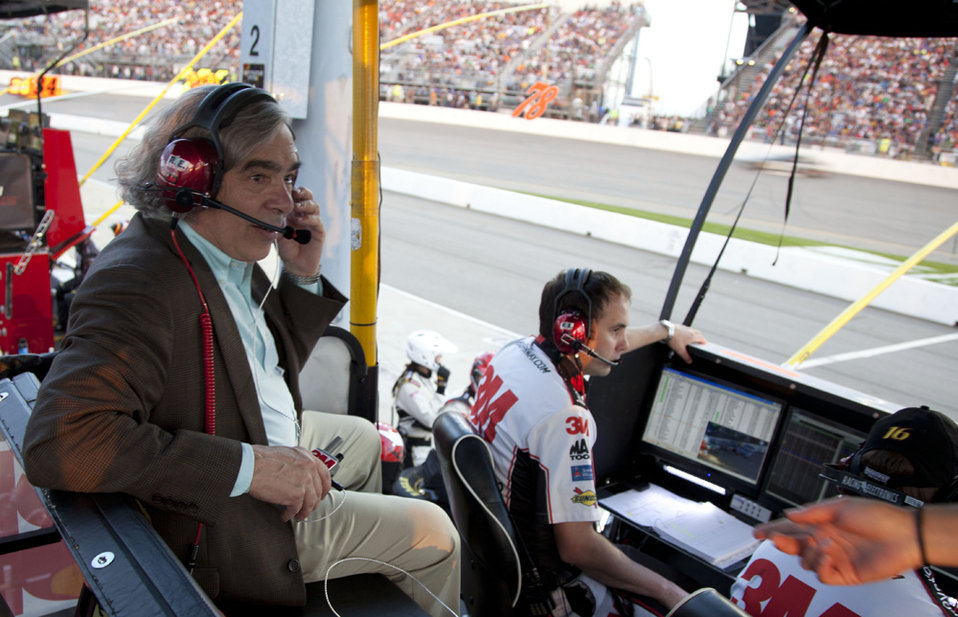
Secretary Moniz visits NASCAR driver No. 16, Greg Biffle's, pit box during the race and listens to the conversation between Biffle and his pit crew on the scanner. Pit crews rely heavily on math and engineering skills to ensure the cars run as efficiently as possible.